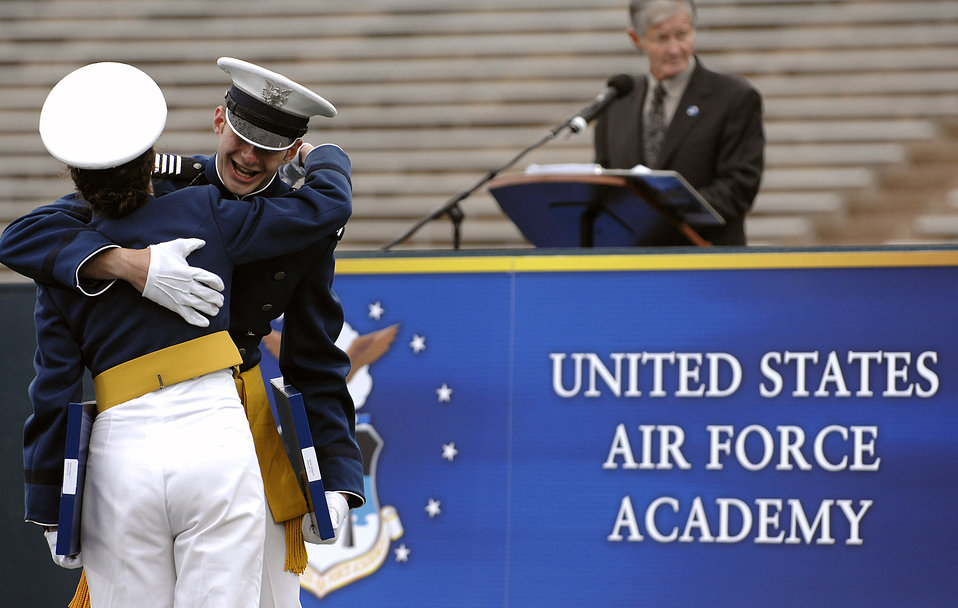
The 50th Academy class graduates

Cadets from the U.S. Air Force Academy Class of 2008 celebrate after receiving their diplomas during the commencement ceremony May 28.